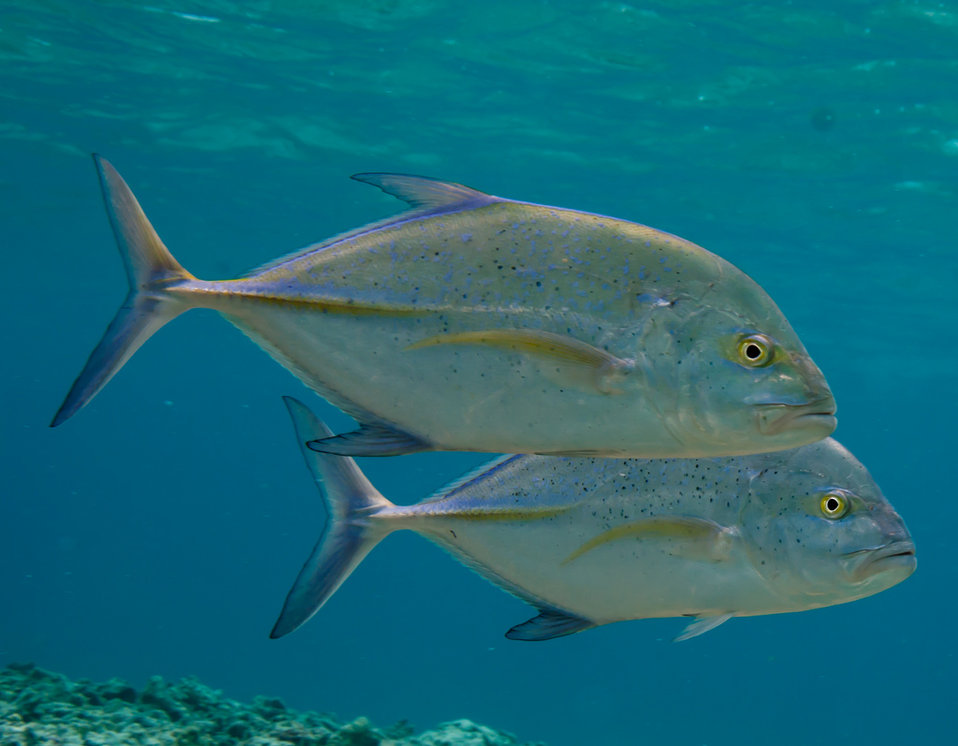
a pair of 'omilu or blue trevally

French Frigate Shoals, Hawaiian Islands National Wildlife Refuge,
Papahānaumokuākea Marine National Monument